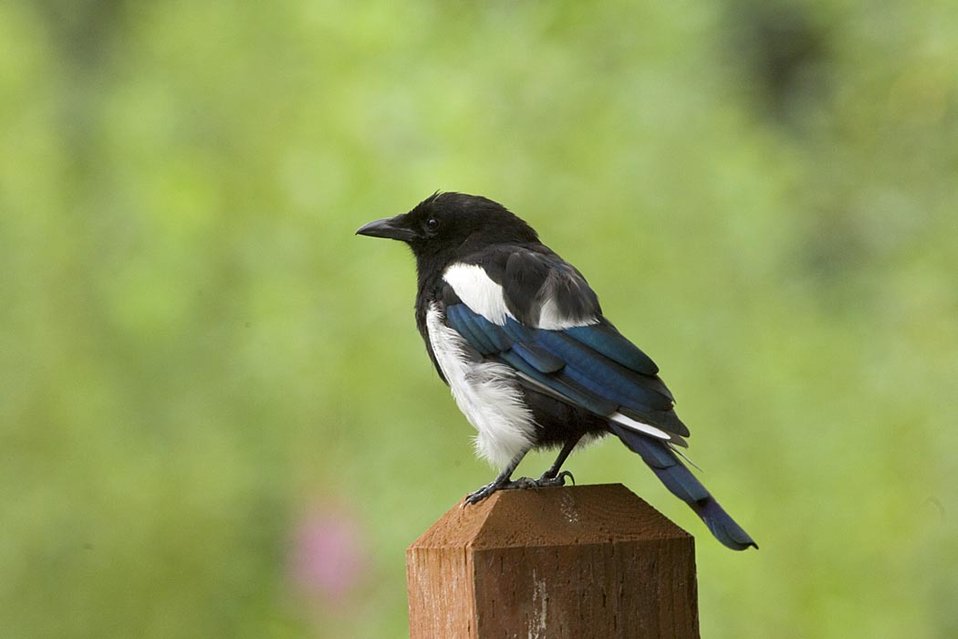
Black-billed magpie

Black-bellied magpie standing on wood post AT Kenai National Wildlife Refuge.